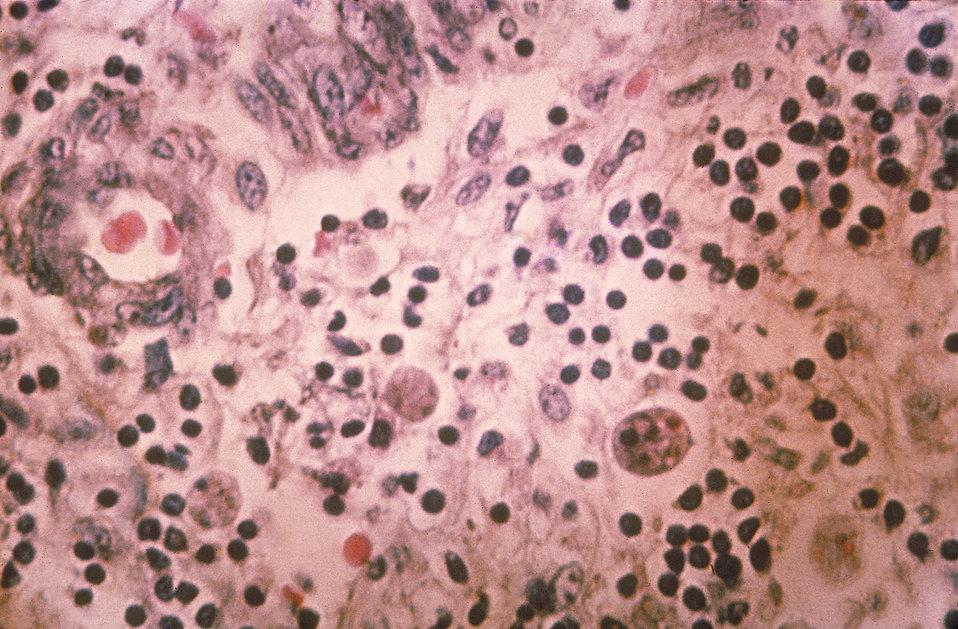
Histopathology of amebiasis. Parasite, ameba.